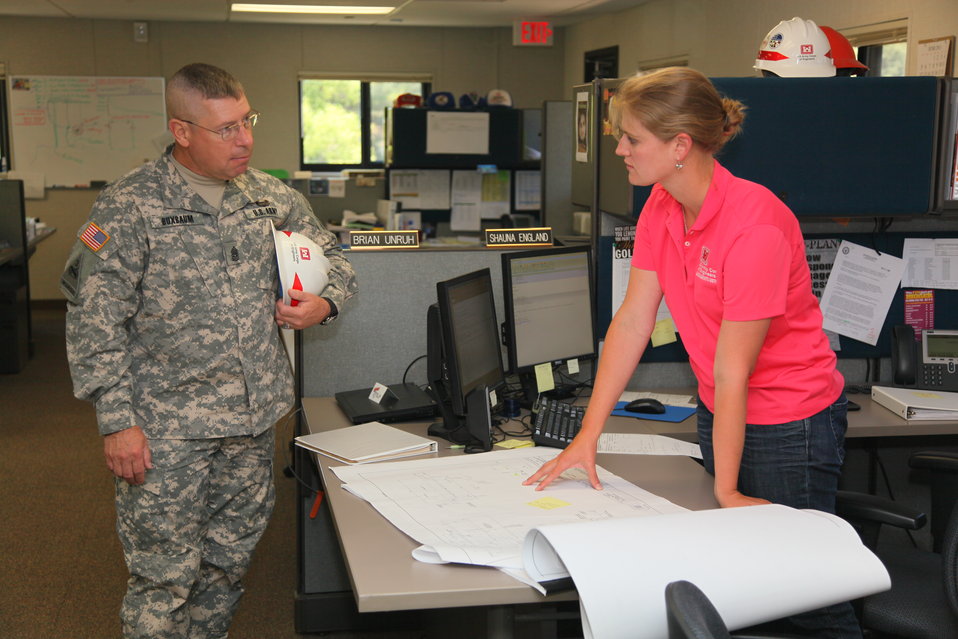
CSM Buxbaum visits Joint Federal Project office

Command Sgt. Maj. Micheal Buxbaum, U.S. Army Corps of Engineers Command Sergeant Major, is given an overview of plans for the concrete for the new auxiliary spillway at Folsom Dam by civil engineer Shauna England during a visit to the Folsom Joint Federal Project office. Buxbaum toured the spillway construction site and the inner workings of the dam in Folsom, Calif., on July 19, 2011. Buxbaum is visiting the Sacramento District from the Corps’ headquarters in Washington, D.C.